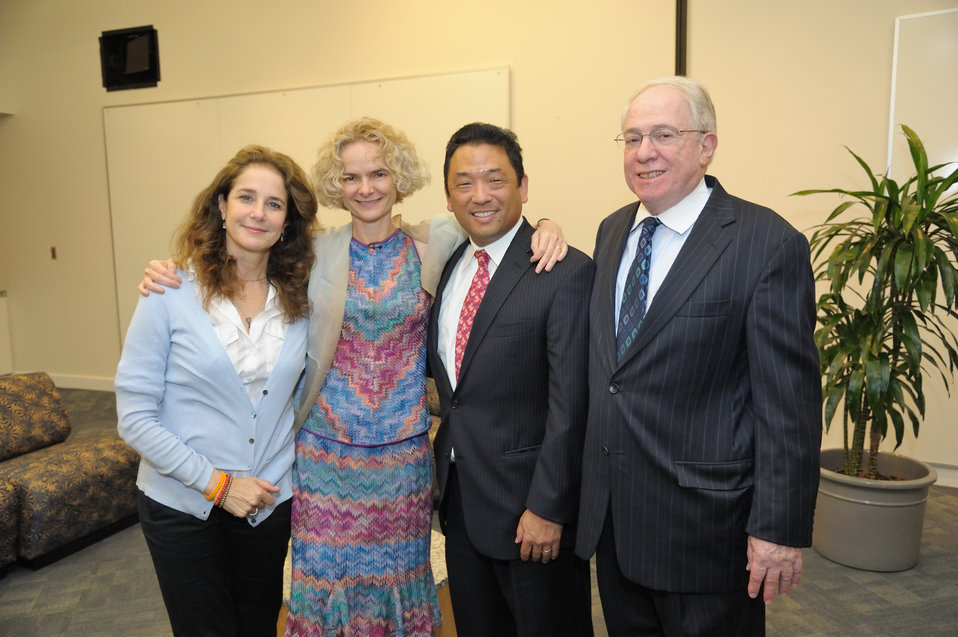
APP2 - NIH Aug 2011

(L-R): Debra Winger, Dr. Nora Volkow (NIDA Director), David Mineta (Deputy Director of Demand Reduction, White House Office of National Drug Control Policy), Dr. Kenneth Warren (Acting Director, NIAAA)